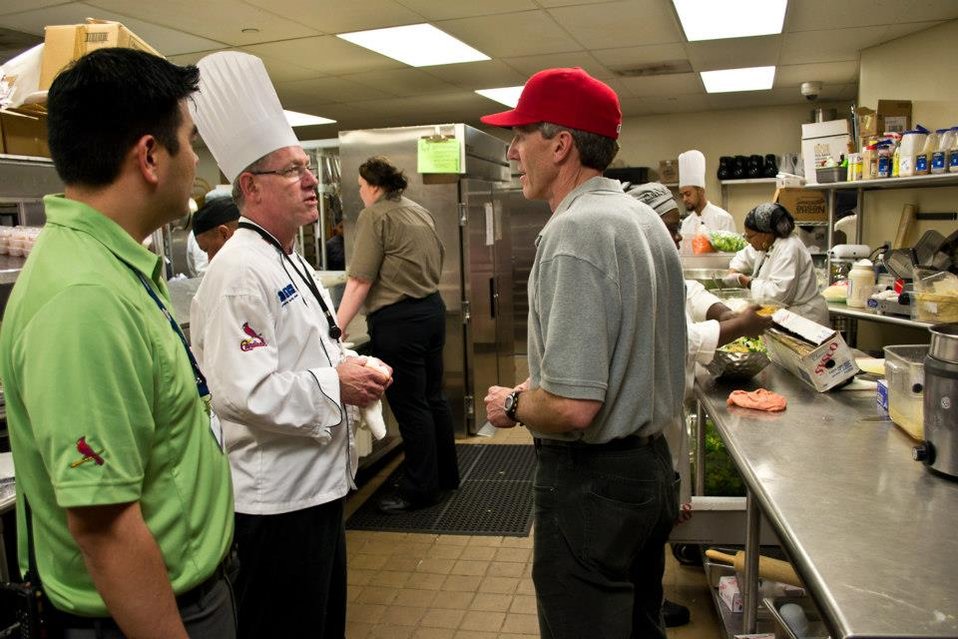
April 29, 2013 - A sneak peak inside the kitchen of the St. Louis Cardinals

During a tour before the EPA ceremony, Chef Jim Thomas with the St. Louis Cardinals, described food recovery practices to Karl Brooks, EPA Region 7 Administrator in the stadium kitchen area, as Hosei Maruyama, (left), St. Louis Cardinals, listens in.